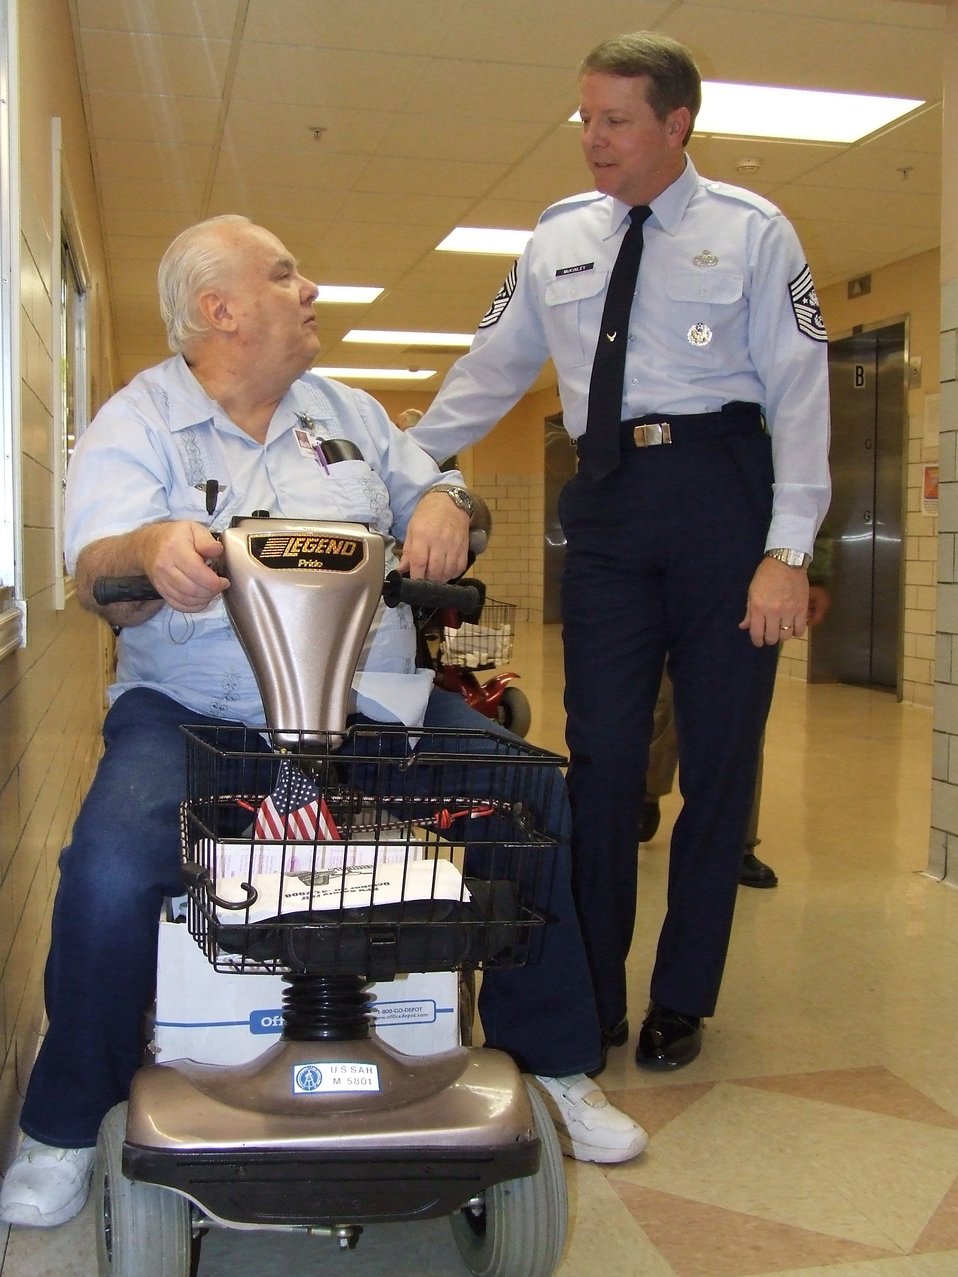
CMSAF visits Armed Forces Retirement Home

Chief Master Sgt. of the Air Force Rodney J. McKinley talks with Air Force veteran Larry Friesel at the Armed Forces Retirement Home in Washington D.C. The chief and his entire staff visited the home Nov. 10 to honor the veterans there.